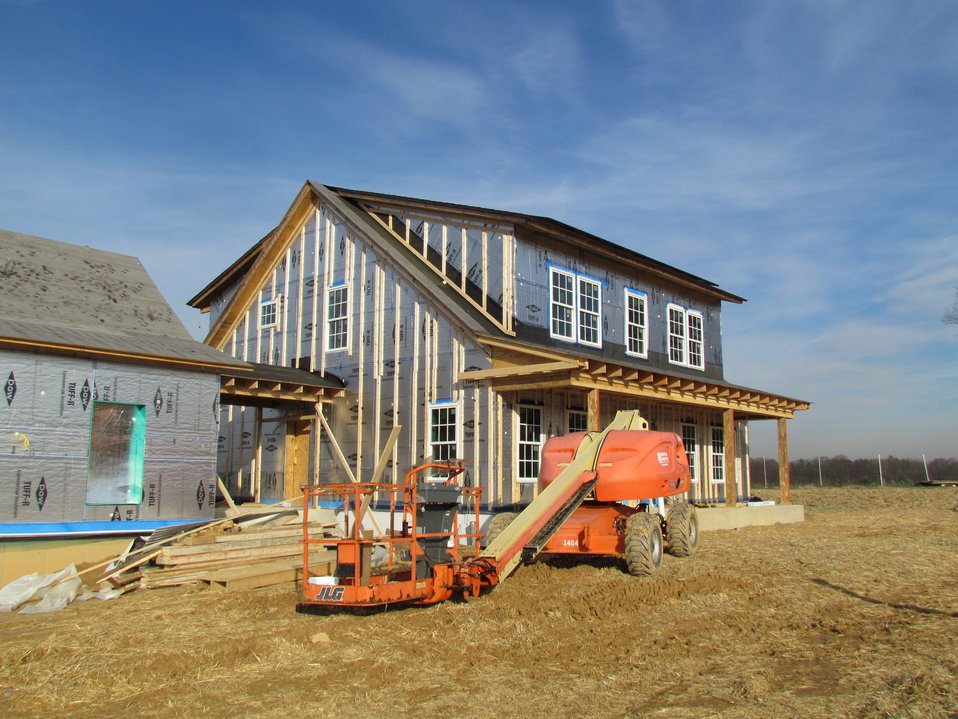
Net-Zero Energy Residential Test Facility – Construction photo showing vertical wooden slats attached to exterior of facility. The composite cement/fiberboard siding will be attached to these vertical slats.